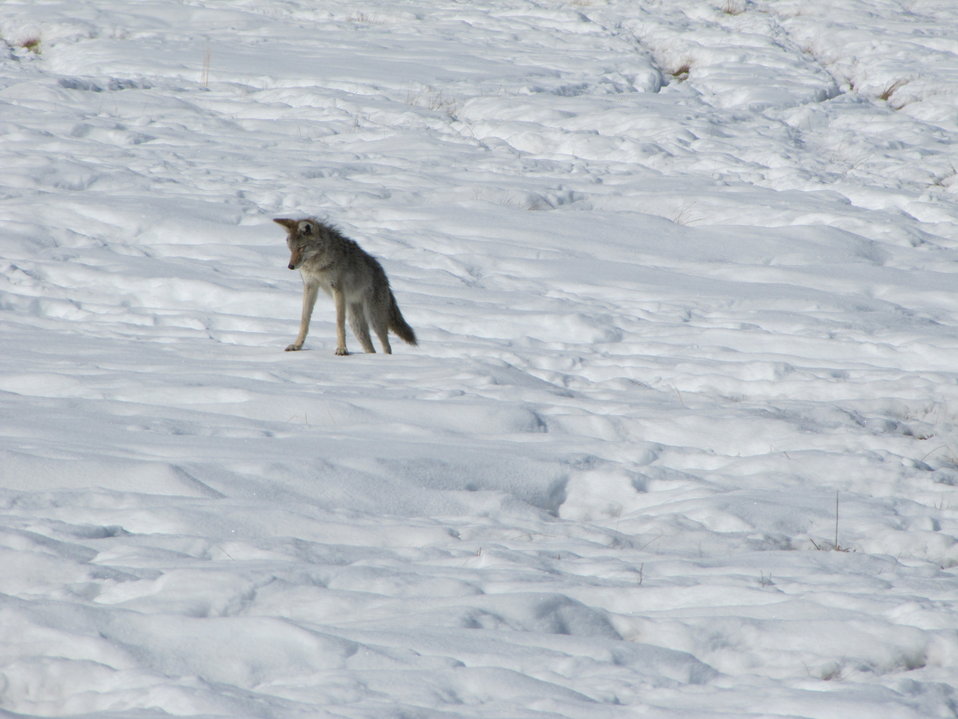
Ready to Pounce

A coyote listens intently as it detects movement under the snow. Seconds after this picture was taken, the coyote pounced and was successfully rewarded with a small animal burrowing in the snow.